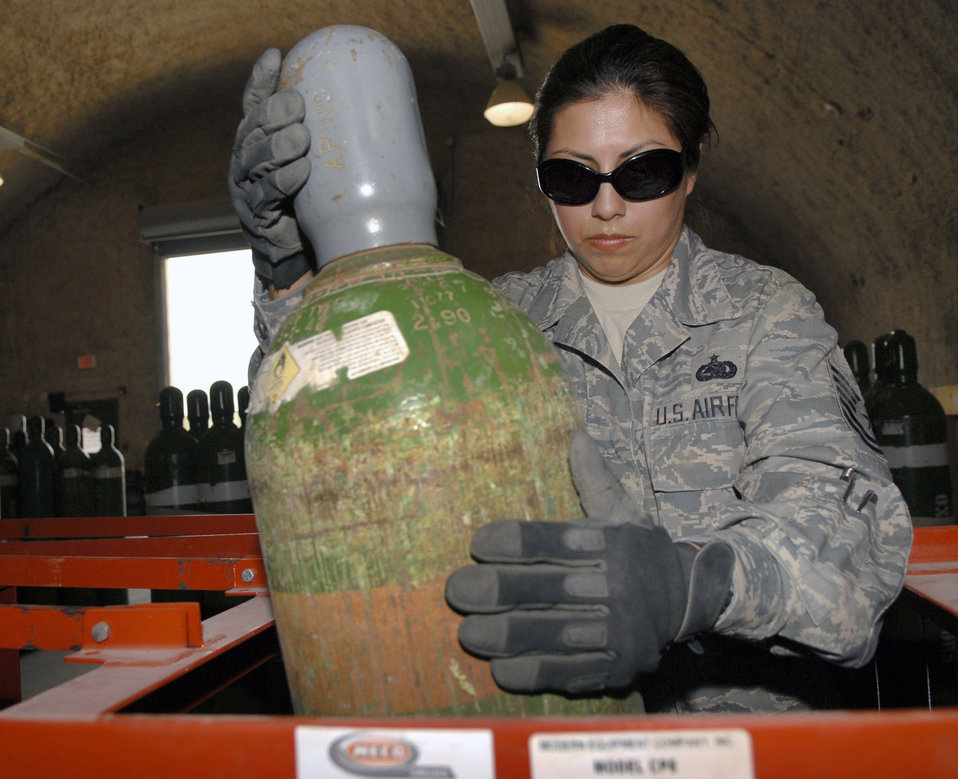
Store for later

Tech. Sgt. Rebecca Gonzales places a liquid oxygen tank into a holding unit March 29 at an air base in Southwest Asia. She is deployed from the Texas Air National Guard's 149th Fighter Wing at Lackland Air Force Base, Texas.